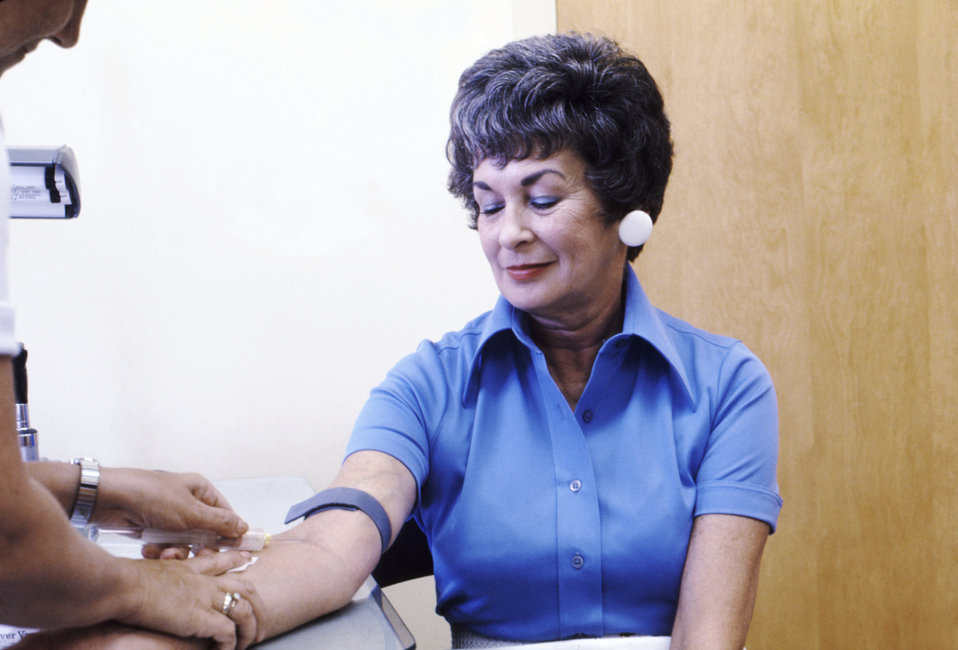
This photograph shows a public health practitioner obtaining a blood sample from a female patient.